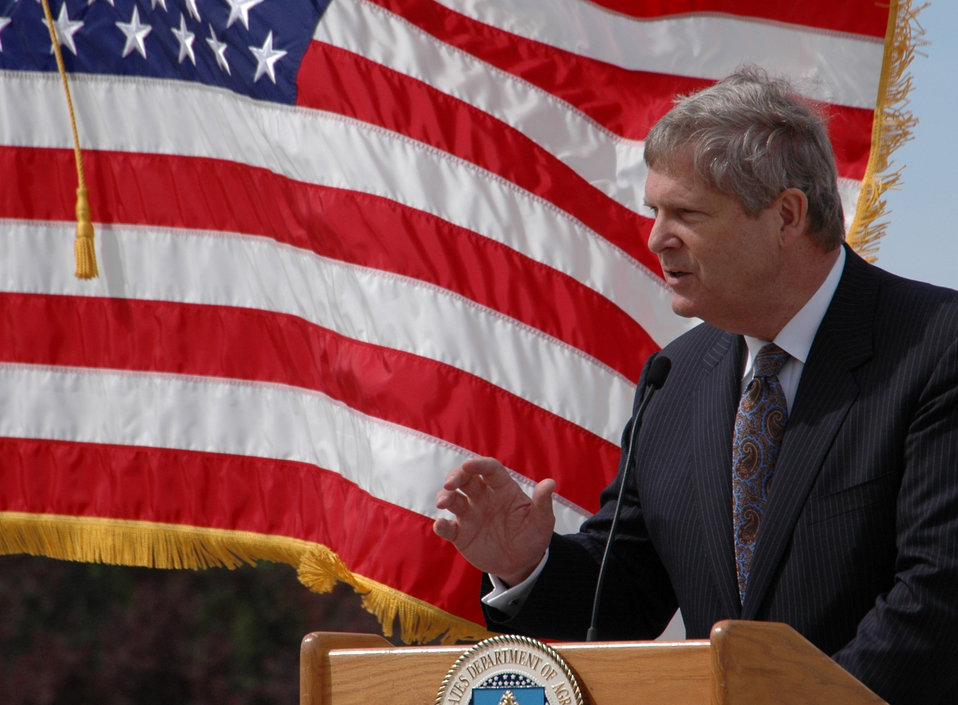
Agriculture Secretary of Tom Vilsack speaks at press conference in Denver, Colorado on Wednesday, May 2, 2012 on the Colorado Roadless Rule.